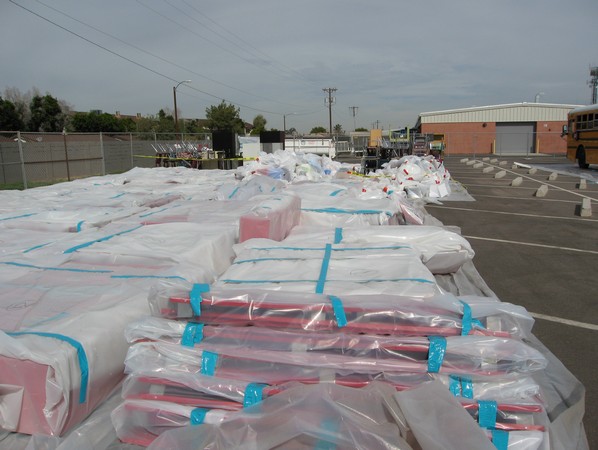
Locker graveyard

After a mercury spill at an Arizona high school, all of these lockers were too contaminated to be used again. They had to be disposed of.